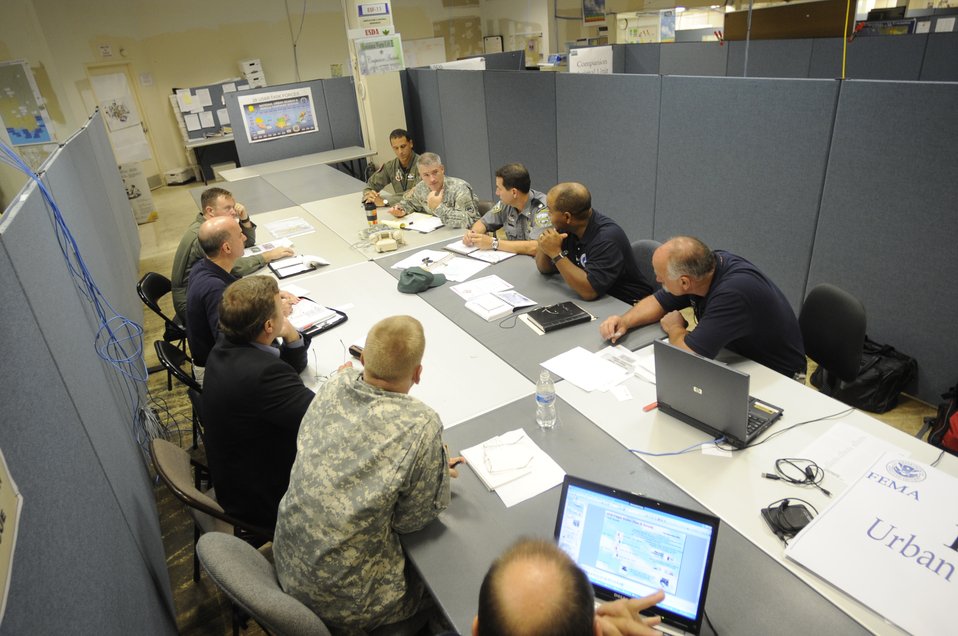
Guard vital to hurricane relief efforts

Officials with the Federal Emergency Management Agency, the Department of Defense and the Urban Search and Rescue Team discuss Hurricane Gustav's relief operations Sept. 1 at the Hurricane Gustav Joint Field Office in Baton Rouge, La.